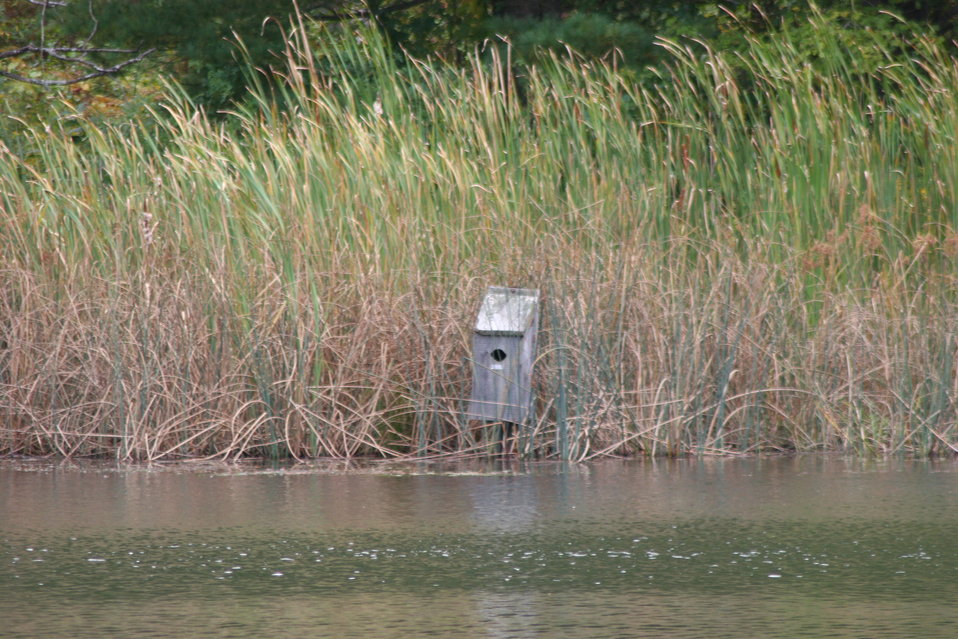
Bird Box at Great Bay National Wildlife Refuge, Newington, NH.